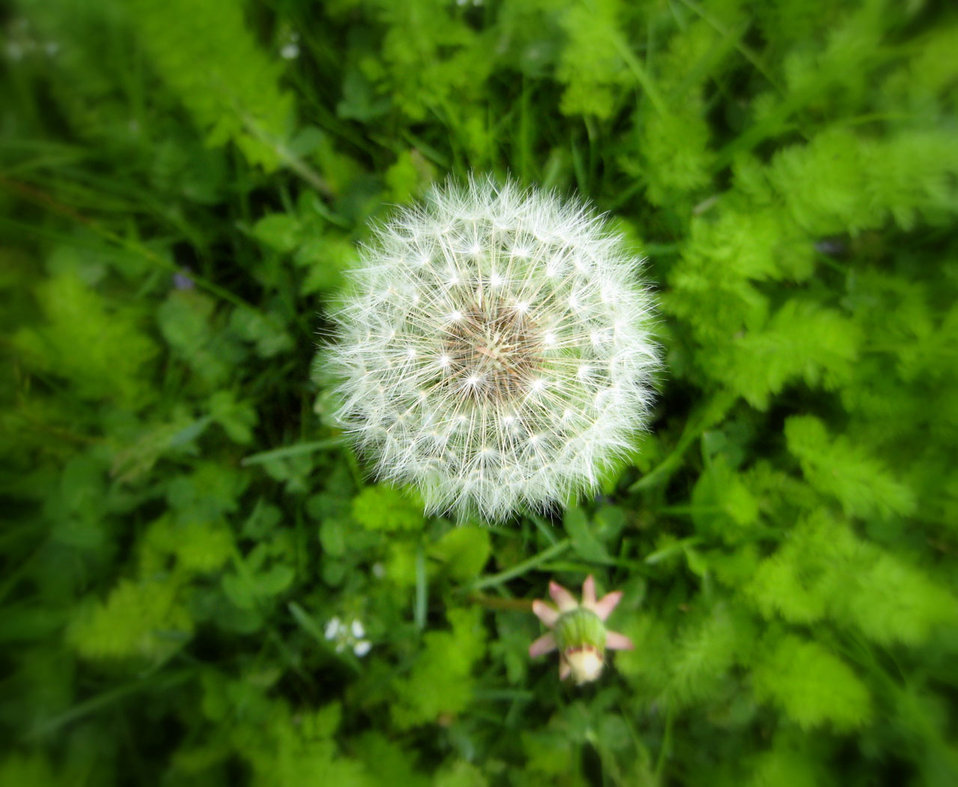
Close up of dandelion

One single seeded dandelion clock.